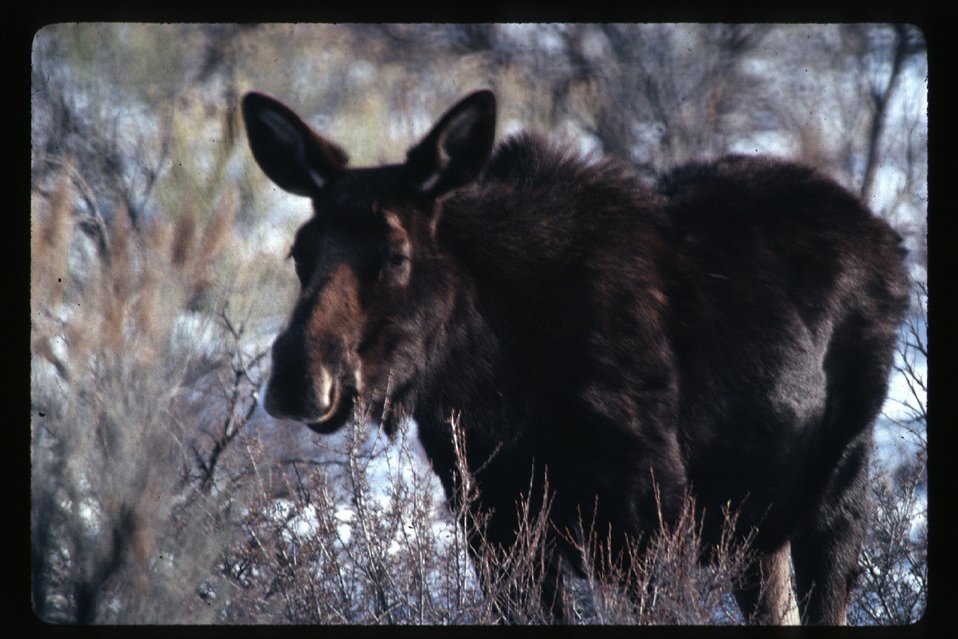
Moose Wildlife USRD Upper Snake River District